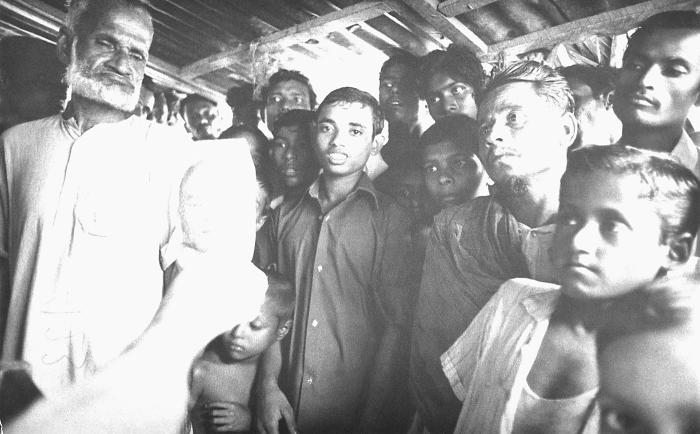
Here, the outstretched arm of a smallpox eradication team member was shown with 'smallpox card' in hand, as it was displayed to a gathering of local Bangladesh townspeople. Both adults and children were present, for it was indeed, an 8 year old child who had reported the last known smallpox case of variola major in an infant named Rahima Banu. The card displayed a photograph on either side. One side depicted a close-up of a young child's face covered by a smallpox maculopapular rash. The other side depicted the entire body of the same child.